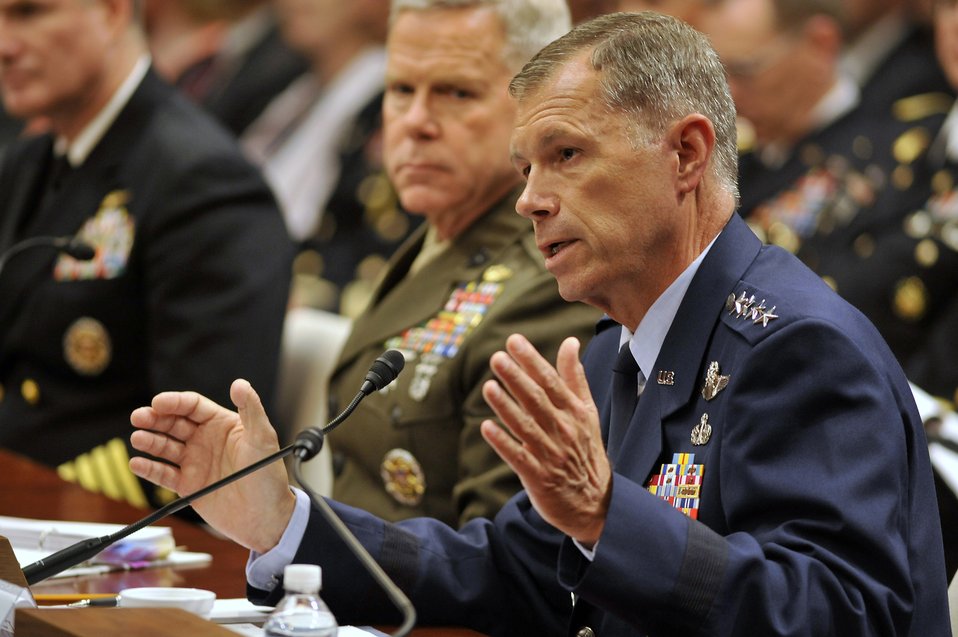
Vice chief of staff testifies to lawmakers about suicide prevention programs

Air Force Vice Chief of Staff Gen. William Fraser (right) testifies before the House Armed Services Committee July 29 on suicide prevention within the military. Each services' vice chief appeared at the U.S. Capitol on behalf of his service-specific programs.